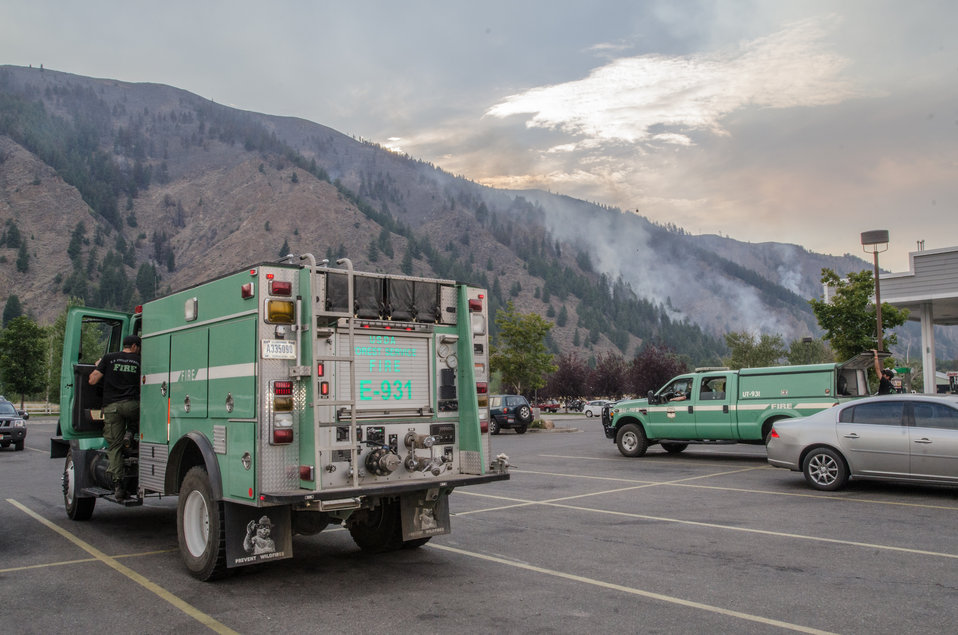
Engine crews are critical to the protection of structures and initial attack of fires that breakout from embers, lightening, and other ignition sources. By focusing on the interface between wildlands and populated area, they help prevent losses due to the Beaver Creek Fire, west of Hailey, ID, on Monday, Aug 19, 2013.